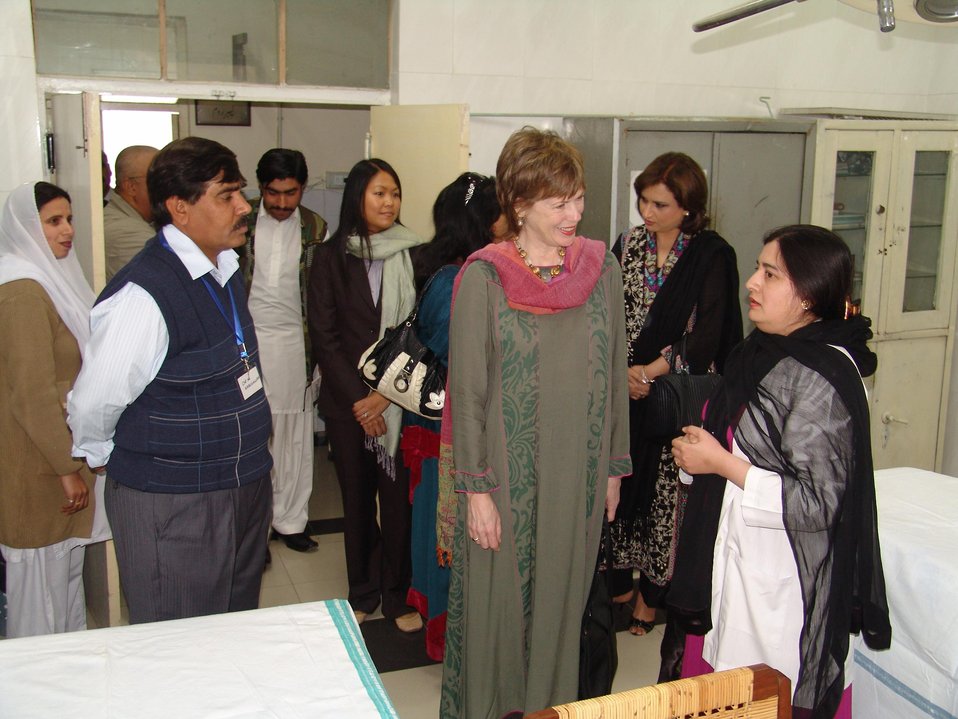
Rural Health Center Care for Mothers and Newborn Children

Gujar Khan, March 6, 2012 – Dr. Marilyn Wyatt, wife of U.S. Ambassador Cameron Munter talking with healthcare workers.